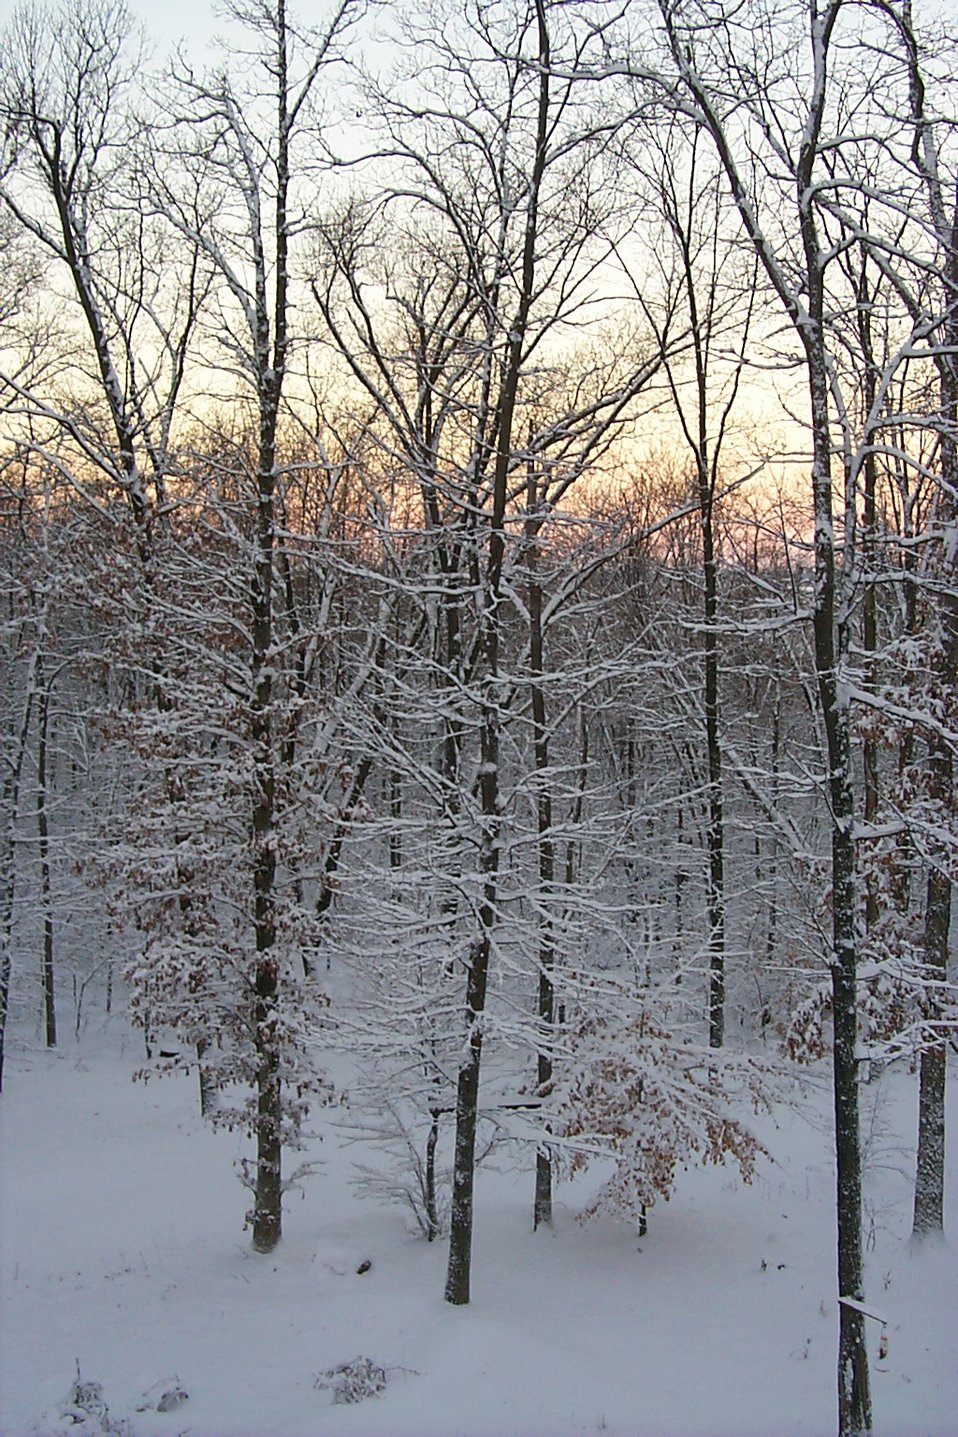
Snowy trees at break of day in the Harpers Ferry area.